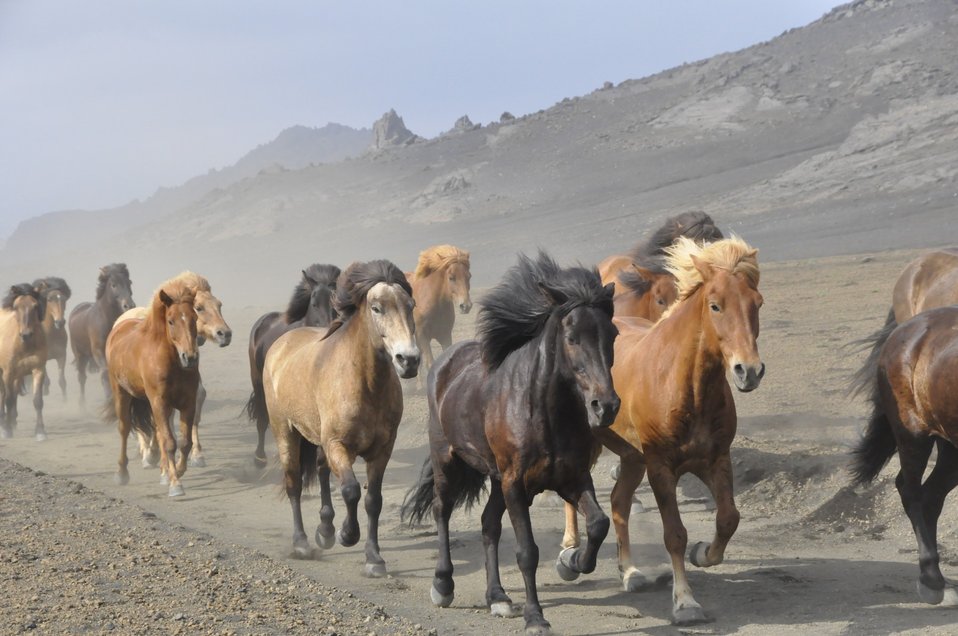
Herd of horses

Icelandic ponies gallop.